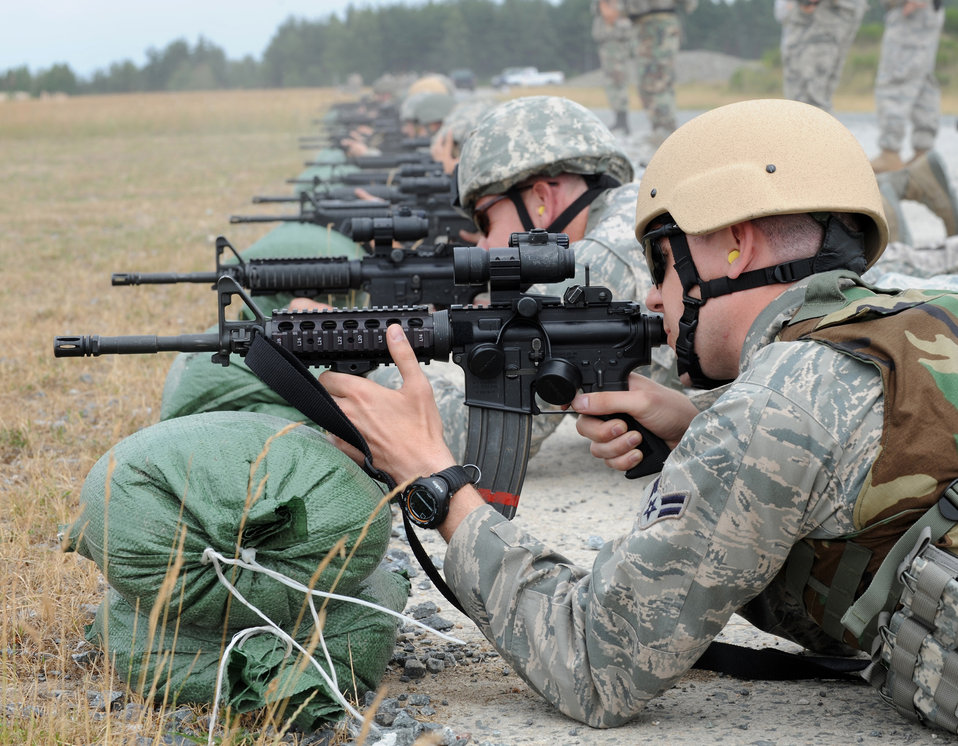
Exercise Allied Strike 2010

Airmen zero weapons during Exercise Allied Strike 10 July 23, 2010, in Grafenwoehr, Germany. Allied Strike is Europe's premier close air support exercise, held annually to conduct robust, realistic CAS training that helps build partnership capacity among NATO nations and joint services while refining the latest operational CAS tactics.